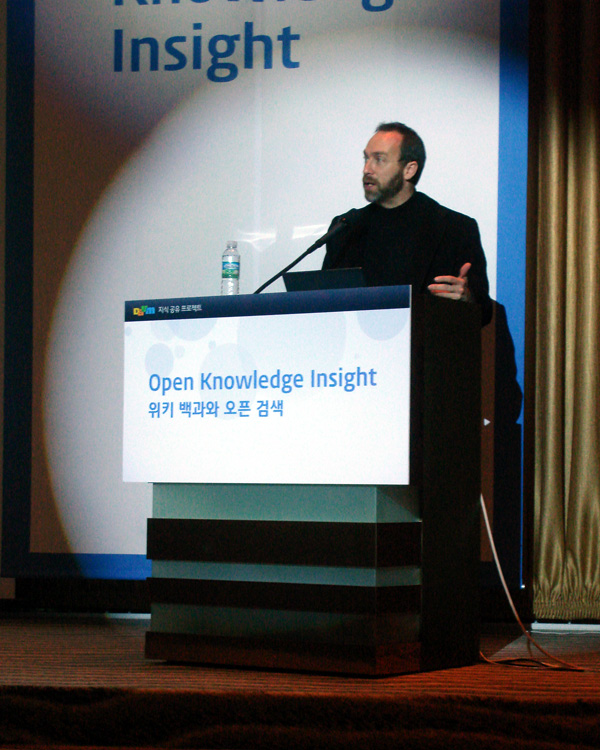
한국어: Open Knowledge Insight 콘퍼런스에서 이야기 중인 짐보 웨일스. 日本語: Open Knowledge Insight カンファレンスで発表中のジンボ･ウエールズ